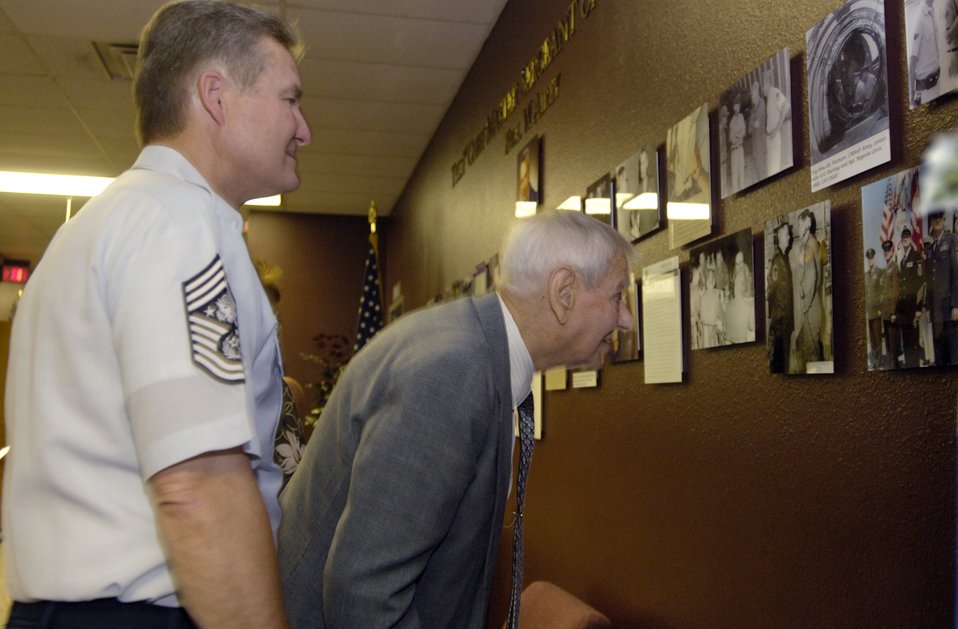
Lackland honors nine enlisted heroes

The first and current Chief Master Sergeants of the Air Force, Paul W. Airey and Gerald R. Murray, view a photographic memorial dedicated to Chief Airey at the Airey Processing Center at Lackland Air Force Base, Texas, on Wednesday, June 14. The building, formerly the 319th Processing Center, was one of nine training facilities dedicated to nine enlisted Air Force heroes who have served from World War II to present-day operations in the war on terrorism. The ceremony was part of a three-day event to honor the 60th anniversary of basic military training.